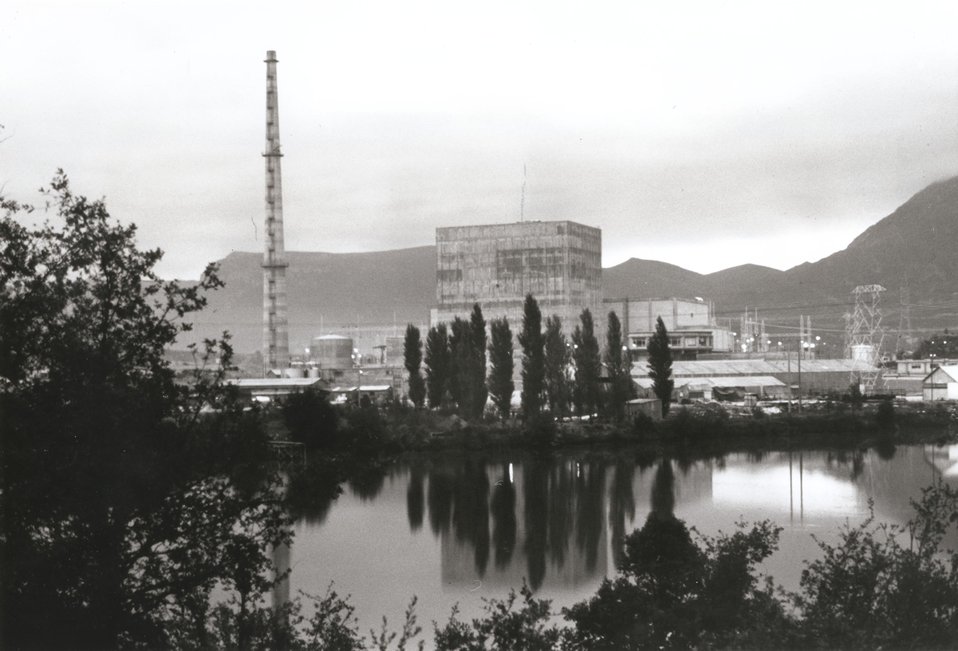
#4 Santa Maria de Garona nuclear power plant, located near Bilbao, Spain, is a U.S. built 460,000 KW BWR, which went critical in early 1971. c. 1971